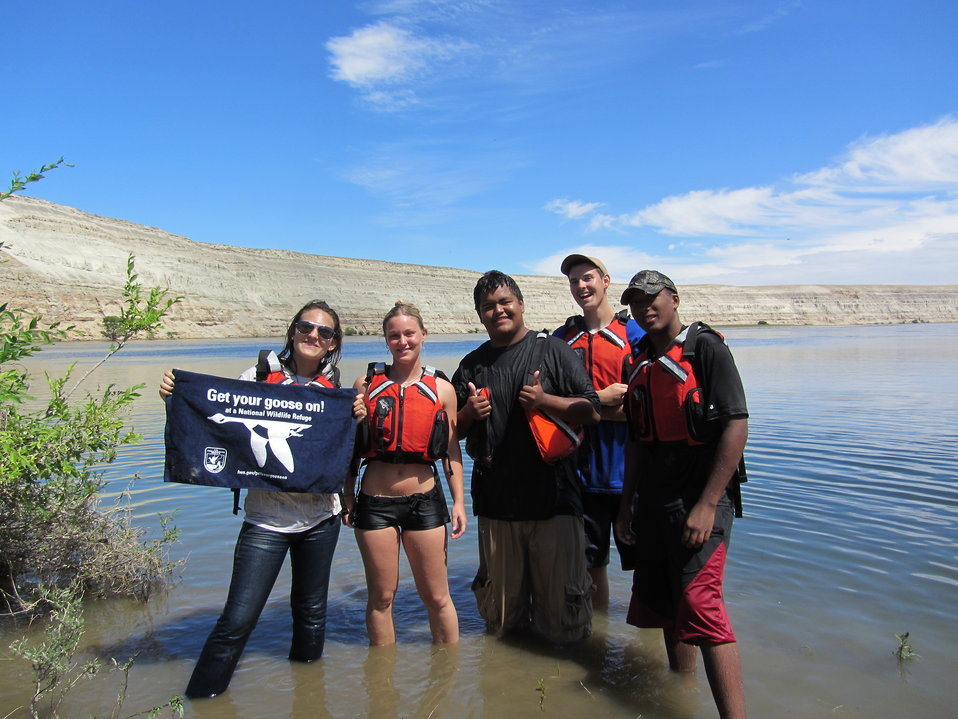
Get Your Goose On! - Columbia River Style

Youth Conservation Corps crew and leader (Wayne) from the McNary NWR at the White Bluffs Overlook on the Columbia River in Hanford Reach National Monument - the U.S. Fish and Wildlife Service's first National Monument! The White Bluffs are in the background.